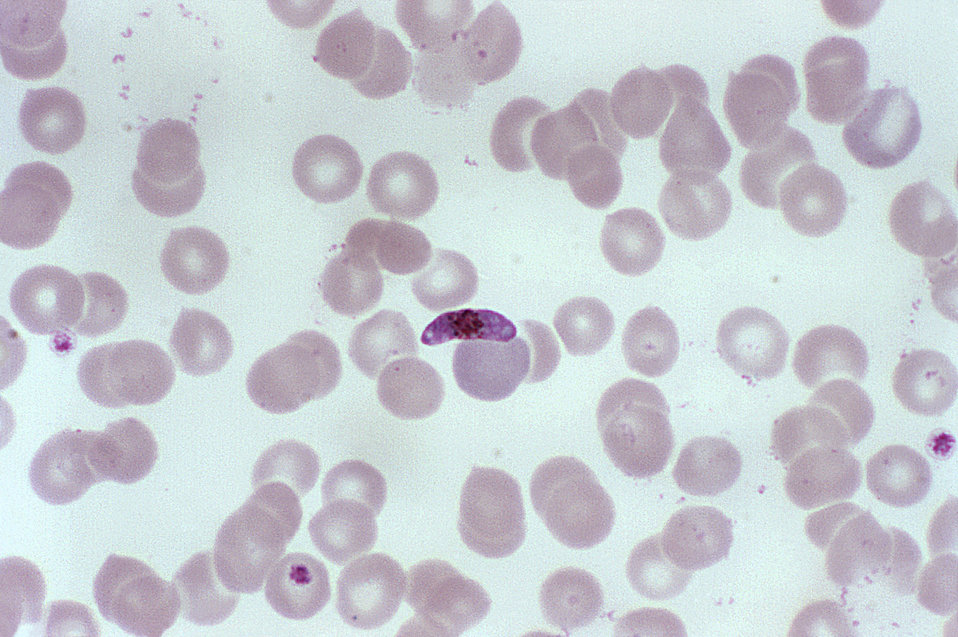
A photomicrograph of a blood smear containing a macrogametocyte of the parasite Plasmodium falciparum.